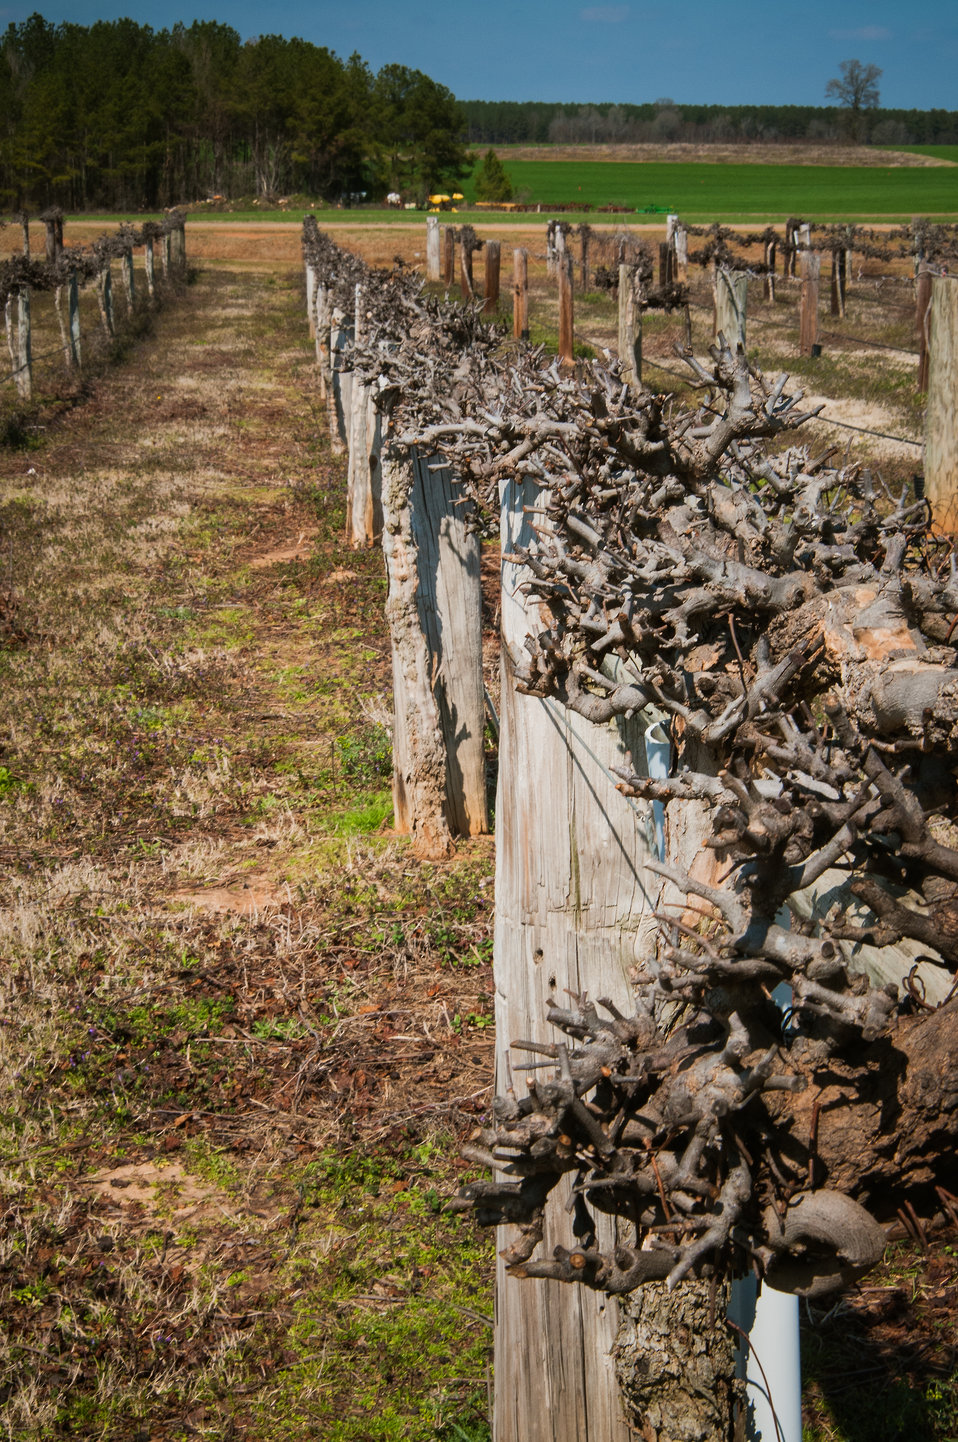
Jibbs Vineyard in Byromville GA was able to install drip irrigation to more efficiently irrigate the vineyard on Mar. 6, 2013. Vineyard owner Howard James mentioned, “It conserves water tremendously. We can take less water and go farther.” James was able to apply for financial and technical assistance through the U. S. Department of Agriculture (USDA) Natural Resources Conservation Service (NRCS) Cooperative Conservation Partnership Initiative (CCPI) funded through the Environmental Quality Incentives Program (EQIP.) The CCPI is a voluntary program to achieve and enhance soil and water conservation objectives. James also has a Conservation Stewardship Program (CSP) for farmers who make it a priority to continuously have conservation plans in place to address natural resource concerns. James has been able to address soil erosion under CSP assistance. He also has a different EQIP contract to retrofit pivots for overhead irrigation to reduce evaporation that gets water closer to his other crops, collards, cotton, peanuts and wheat. Jibbs Vineyard is in Dooly County Georgia, a designated USDA Strike Force Initiative county selected to receive assistance to relieve persistent poverty in high poverty counties.